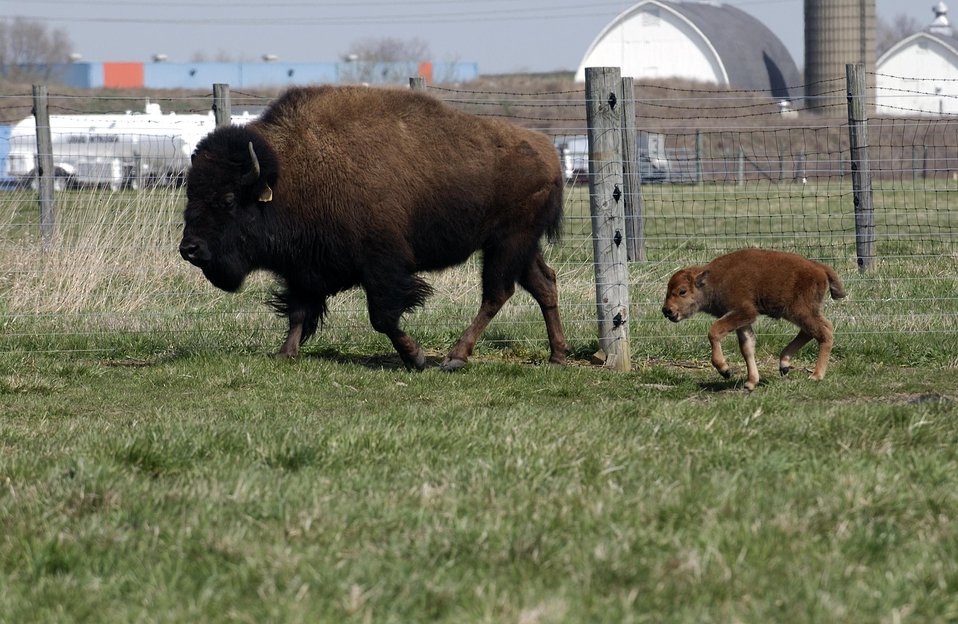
THE FIRST BORN BUFFALO CALF OF 2004 AT THE FERMI NATIONAL ACCELERATOR LABORATORY.

IN AN EFFORT TO RECOGNIZE FERMILAB'S PRAIRIE HERITAGE, THE LABORATORY'S FIRST DIRECTOR, ROBERT WILSON INTRODUCED AMERICAN BISON TO THE SITE IN 1969. IN 1971, THE ILLINOIS DEPARTMENT OF CONSERVATION ADDED MORE. THE CURRENT HERD ARE DESCENDANTS OF THOSE FIRST ANIMALS.